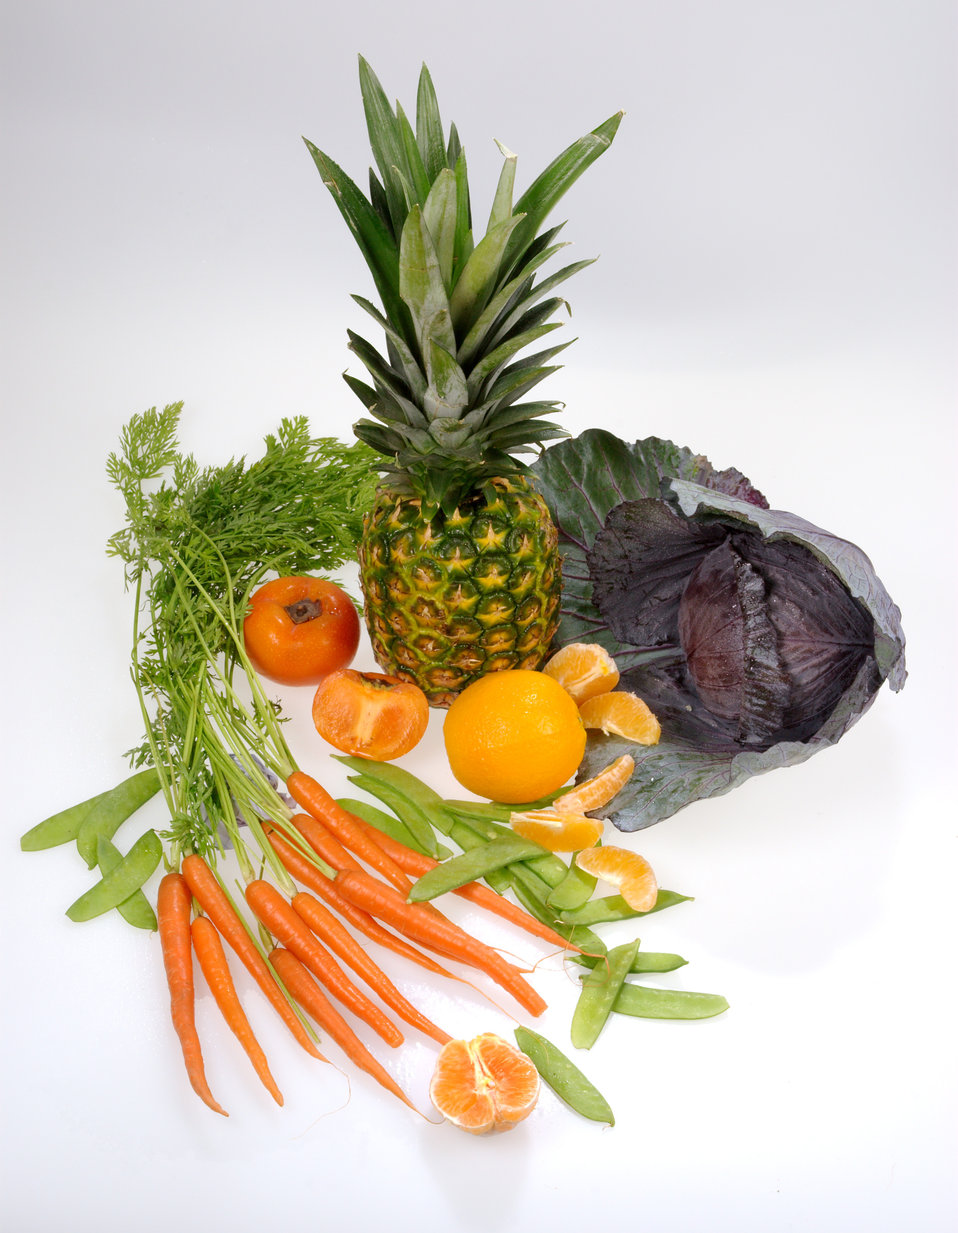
Included in this grouping of fruits and vegetables was a bunch of carrots, snow peas, one sectioned and one whole orange, one and one half persimmons, a pineapple, and a head of cabbage.